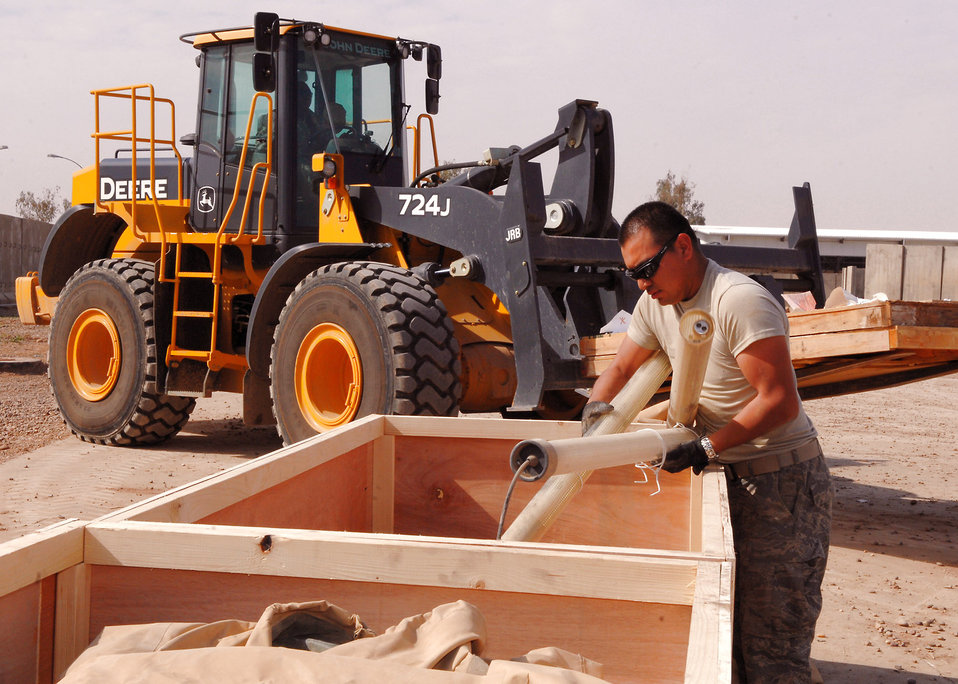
Temporary hospital finds permanent place in history

BStaff Sgt. Gabriel Lira loads up lighting fixtures Feb. 29 from the old Air Force Theater Hospital emergency room at Balad Air Base, Iraq. The parts will be shipped to the National Museum of Health and Medicine in Washington. The tent is slated for exhibition because it is known, by the medical community, as the place where the most American blood was spilled since the Vietnam War. Sergeant Lira is a 332nd Expeditionary Civil Engineer Squadron structures craftsman deployed from Peterson Air Force Base, Colo.